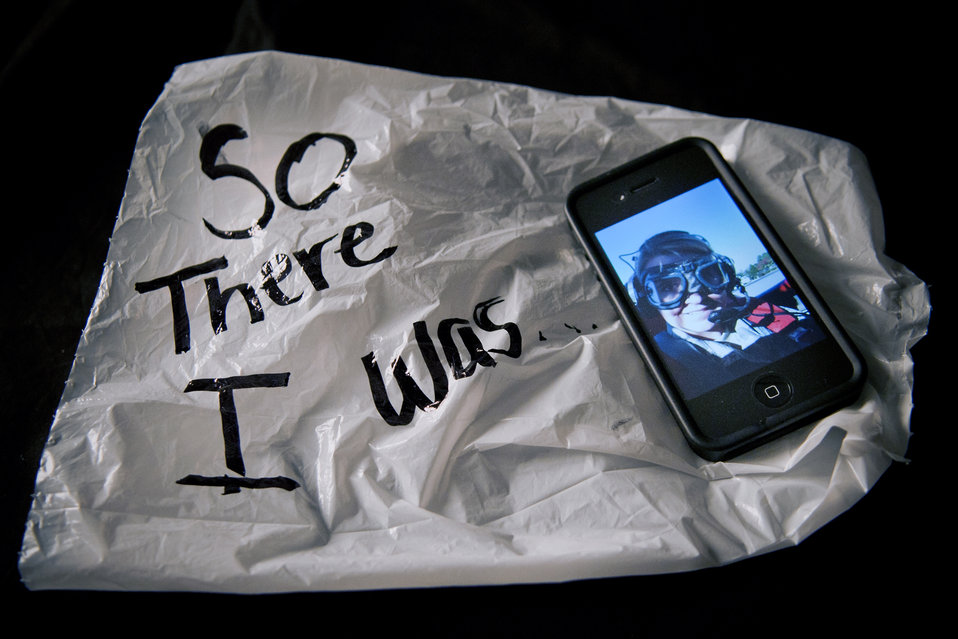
I pulled a G

A self portrait taken on a cell phone and an airsick bag -- a few momentos from Staff Sgt. Andrea Thacker's first ride in an open cockpit aircraft Nov. 11, 2010, over Valdosta, Ga.